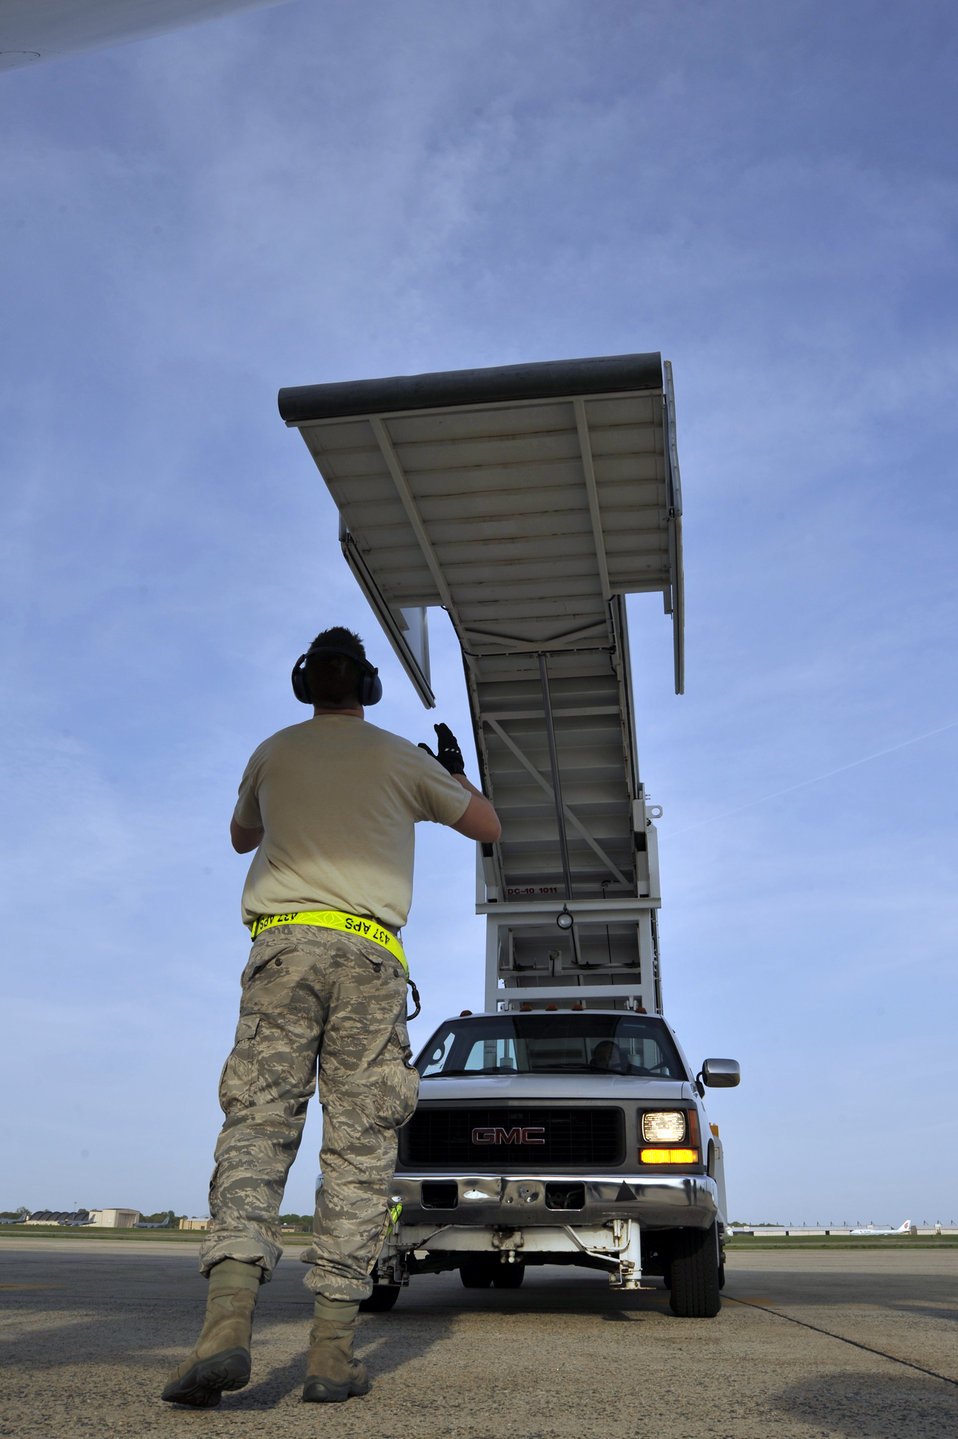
Airmen lend a hand to world leaders

Senior Airman Brian Tater directs the stair truck to door of the Filipino President Gloria Macapagal-Arroyo's plane after her arrival for the Nuclear Security Summit April 12, 2010, at Joint Base Andrews, Md. Airman Tater is an aerial port specialist assigned to the 437th Aerial Port Squadron at Pope Air Force Base, N.C.